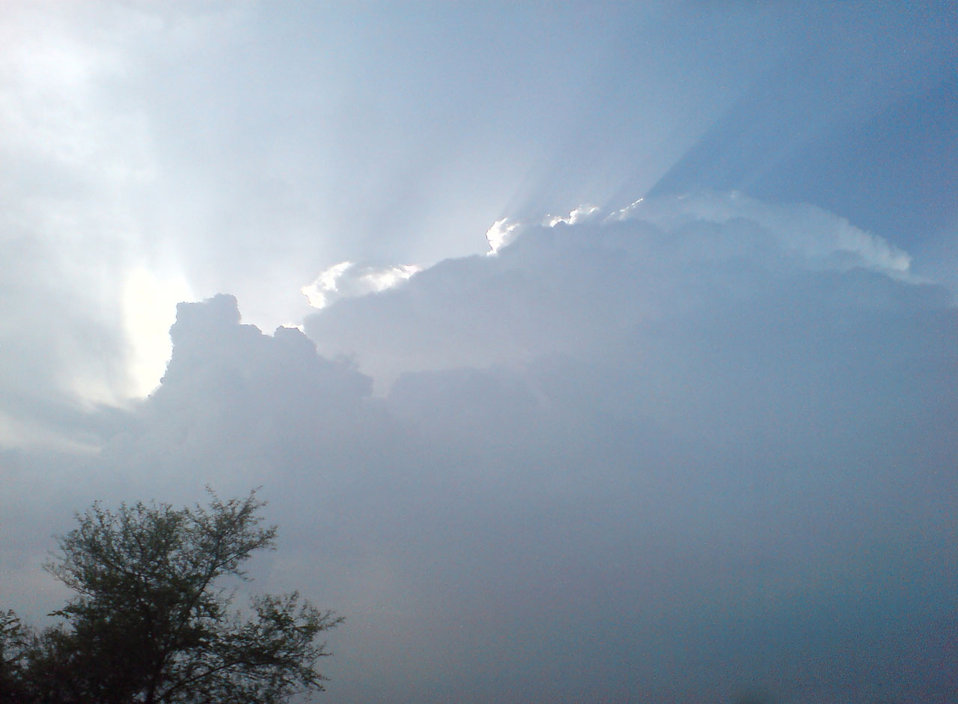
Clouds

Sunlight behind the clouds.